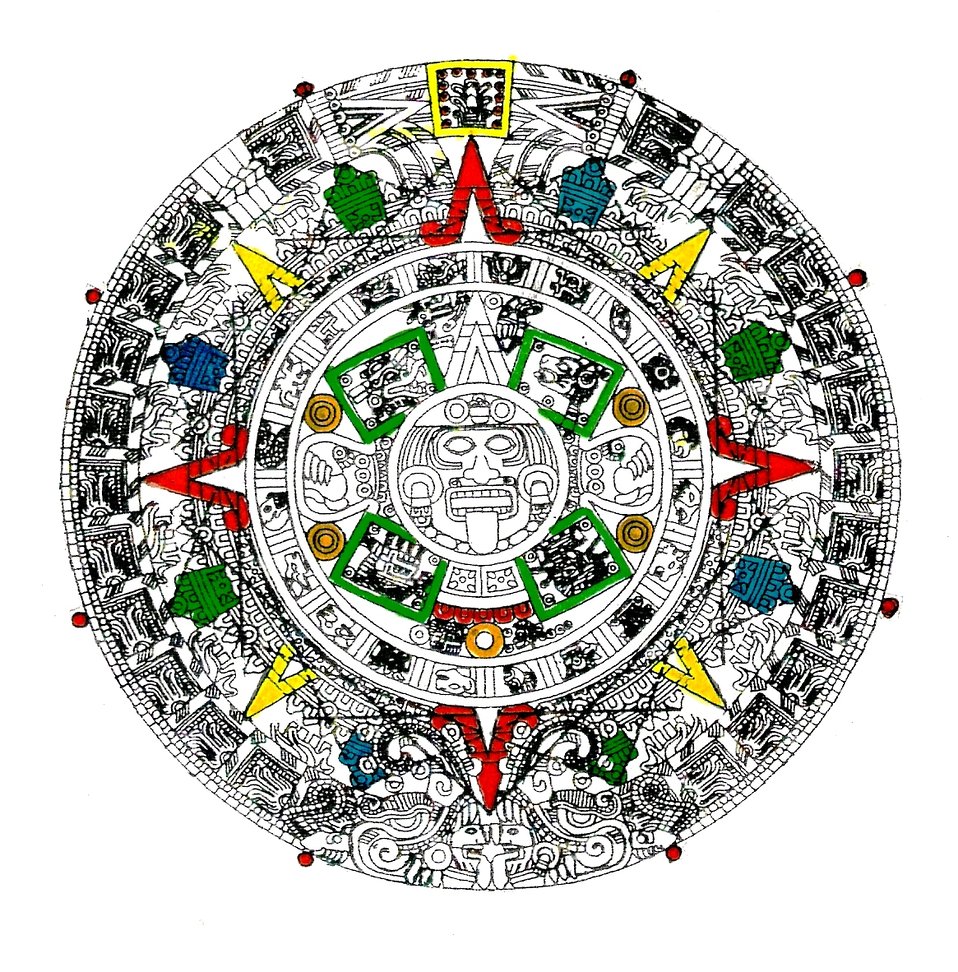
Desenho em tinta nanquim sobre a Pedra do Calendário Solar.